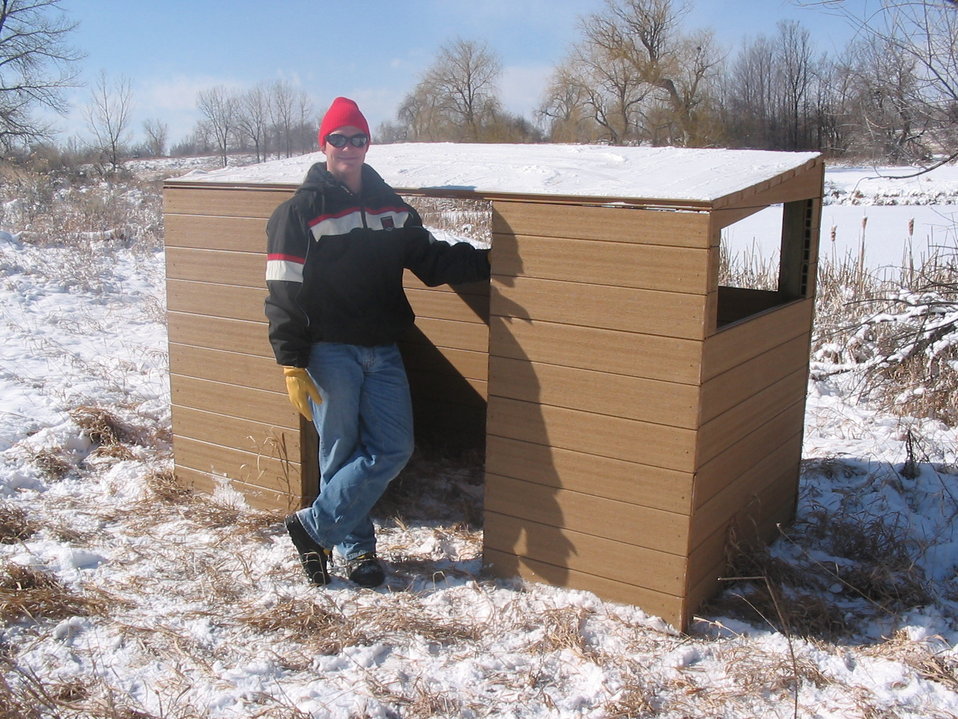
Eagle Scout - Viewing Blind